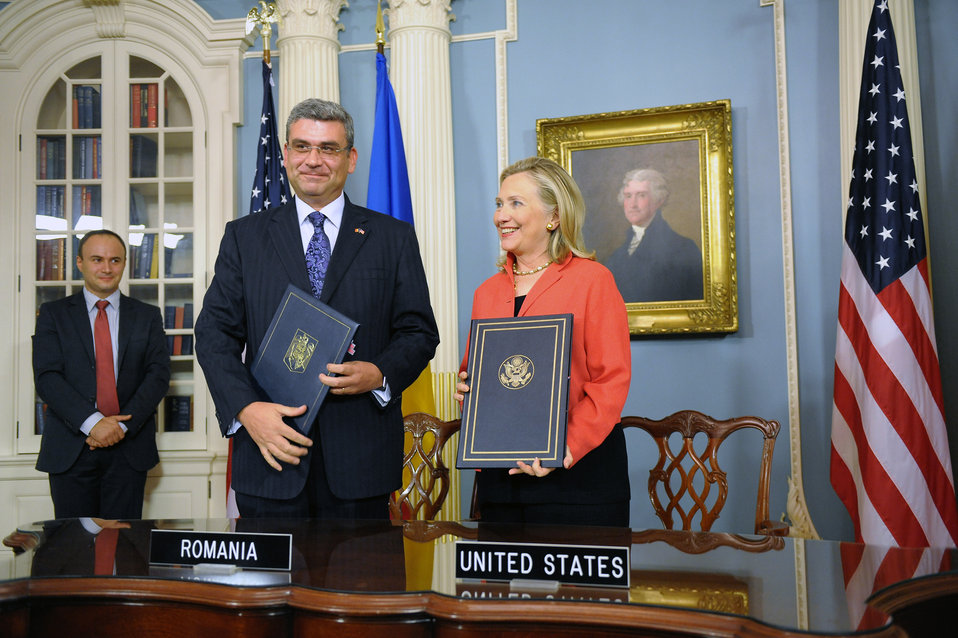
Secretary Clinton and Romanian Foreign Minister Baconschi Pose for a Photo

U.S. Secretary of State Hillary Rodham Clinton and Romanian Foreign Minister Teodor Baconschi pose for a photo after signing the Ballistic Missile Defense Agreement, in the Treaty Room at the U.S. Department of State in Washington, D.C., on September 13, 2011.